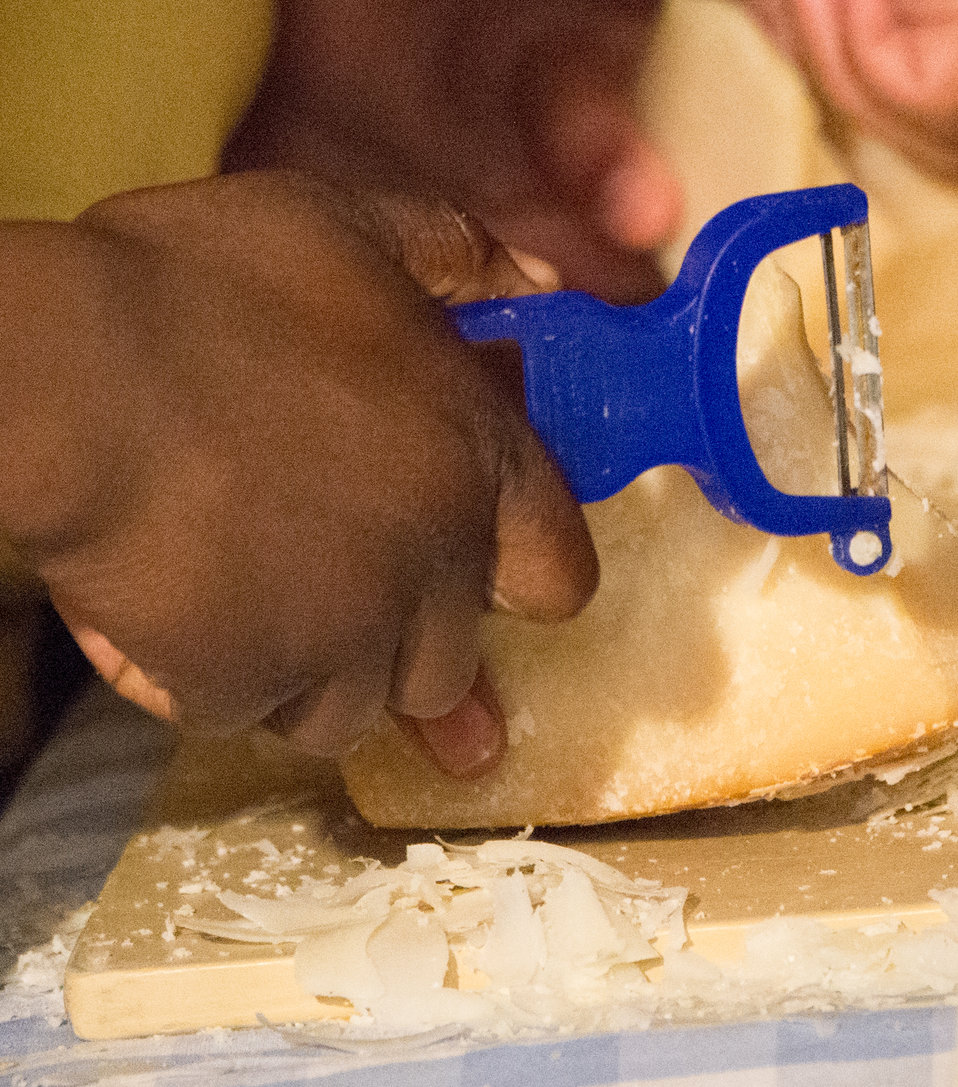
Washington, D.C. students from Cleveland Elementary School, Friendship Public Charter School, Kimball Elementary School, Bancroft Elementary School, and Harriet Tubman Elementary School prepare lunch from this year’s summer crop of vegetables from the White House Kitchen garden in the State Dining Room of the White House in Washington, D.C. on Thursday, Jun. 12, 2014. The students, who helped plant the garden in the spring, made lunch with the help of White House chefs and visiting school nutrition directors from Orlando, FL, Dallas, TX, and West Virginia.